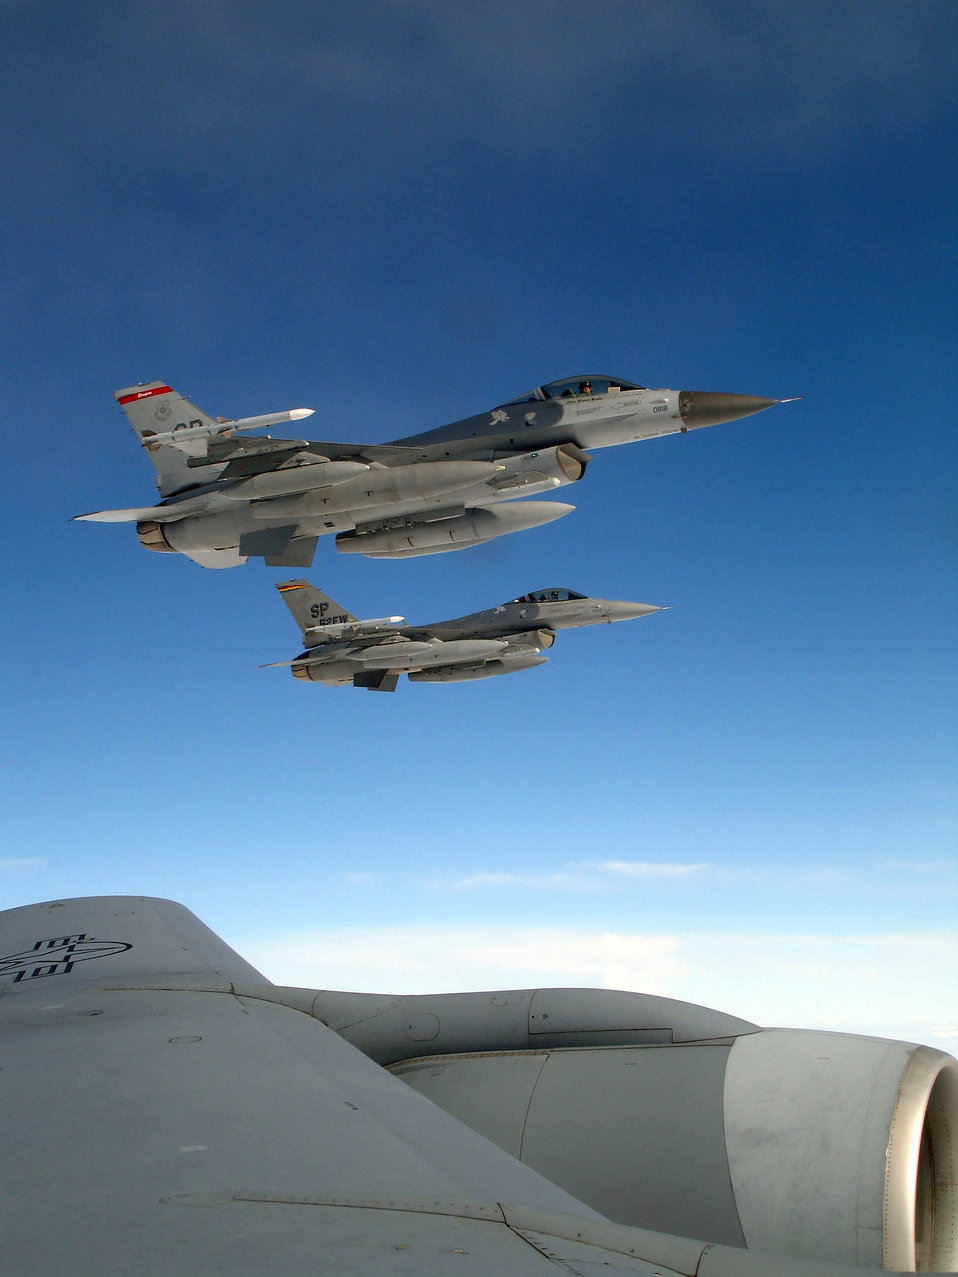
Moscow Air Show

ZHUKOVSKY, Russia -- Two F-16 Fighting Falcons from Spangdahlem Air Base, Germany, await refueling from a KC-135 Stratotanker from Royal Air Force Mildenhall, England, en route to the Moscow International Aviation and Space Salon Aug. 14. About 100 servicemembers are participating in the air show Aug. 16 to 21.